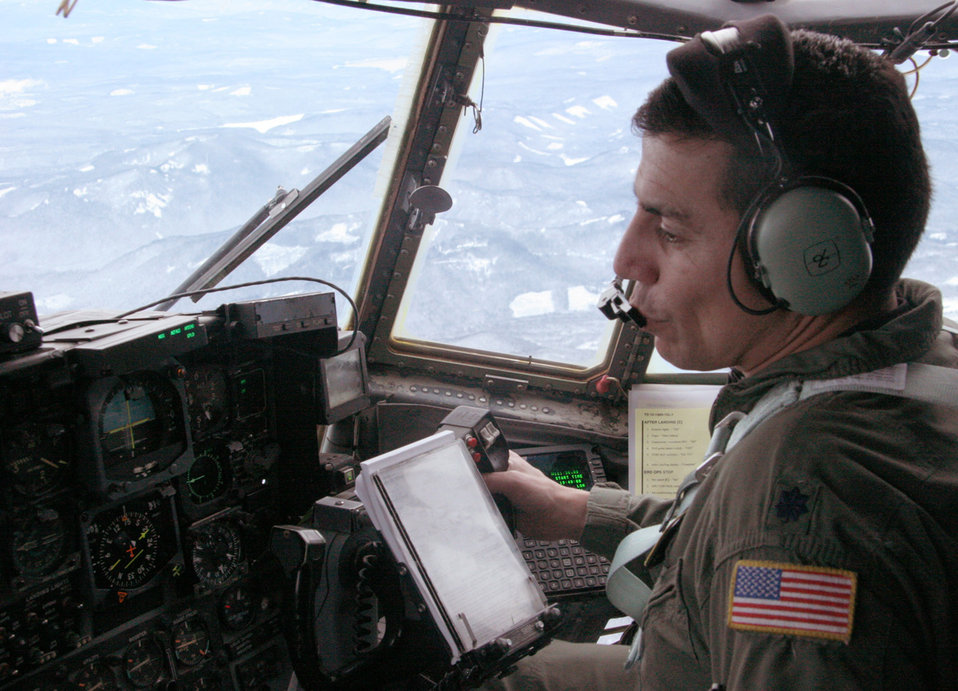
Oregon, Nevada Reservists join search for missing trio

Lt. Col. Caesar Garduno receives coordinates while flying over Mt. Hood, Ore., Dec. 16. Colonel Garduno and his Air National Guard crew were joined by an Air Force Reserve pararescueman searching for three missing climbers. The colonel is a C-130 pilot from the 152nd Airlift Wing in Nevada.